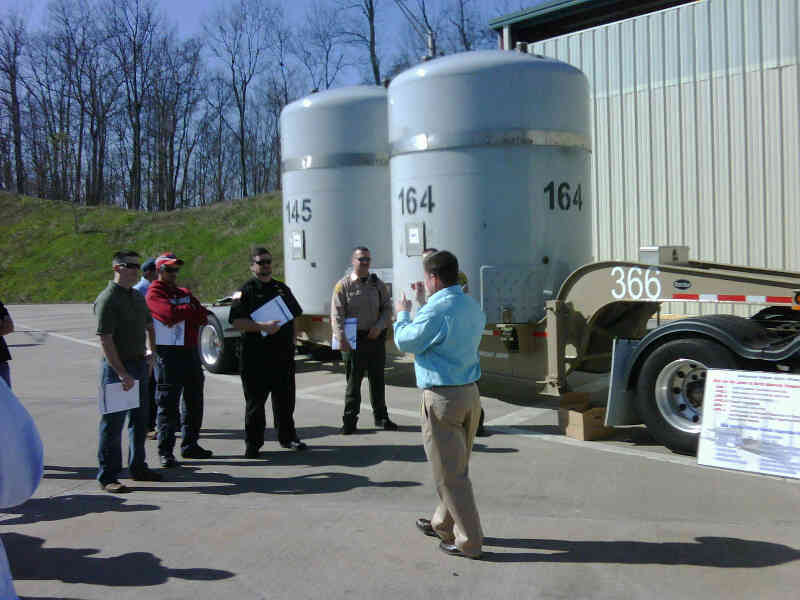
WIPP Accelerates Route Openings with ARRA Funding

A WIPP road show stops in Gray, TN.

Prior to any waste being shipped to WIPP for permanent disposal, the route to be used must be approved. This requires meeting with state and local officials regarding the proposed route.